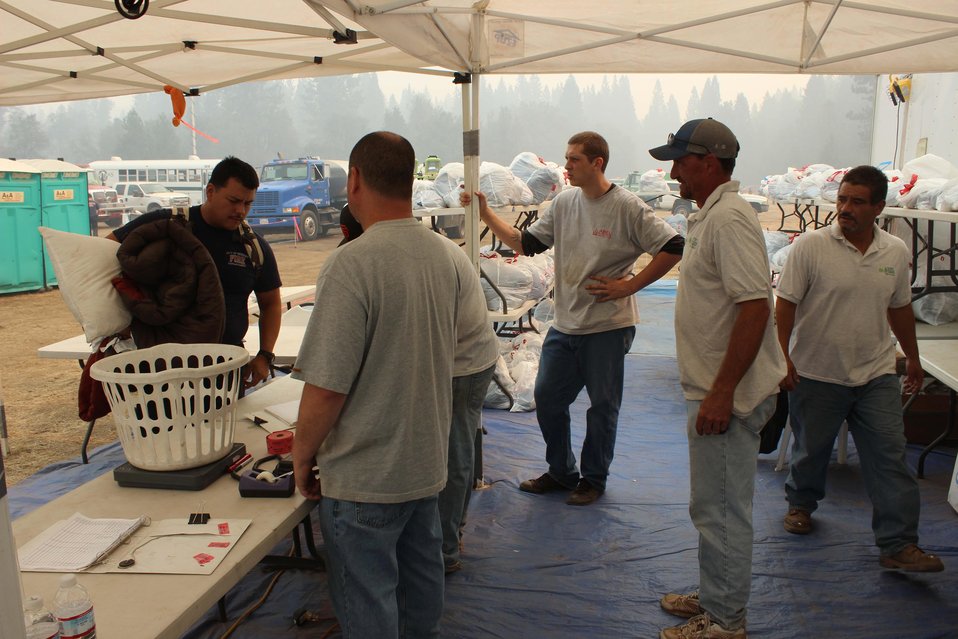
The laundry unit at the Rim Fire Incident Command Post (ICP) is a busy place. The Rim Fire in the Stanislaus National Forest near in California began on Aug. 17, 2013 and is under investigation. The fire has consumed approximately 235,841 acres and is 70% contained.